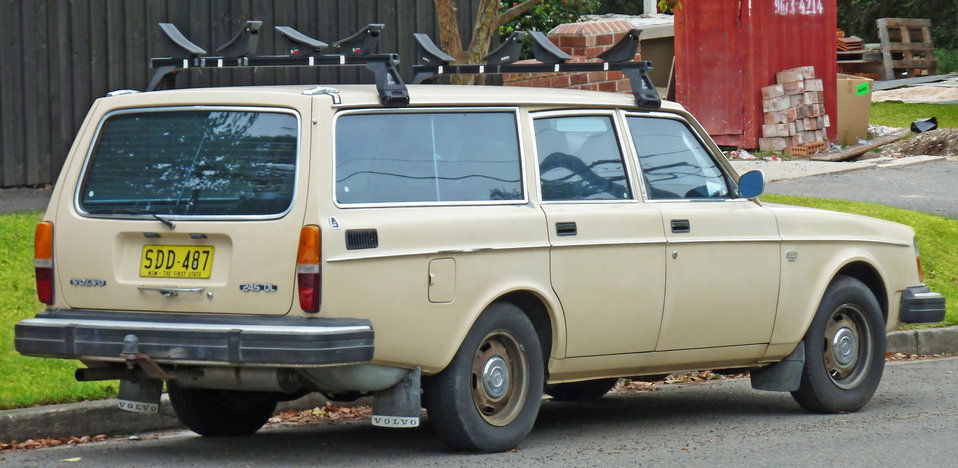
1978 Volvo 245 DL station wagon, photographed in Roseville, New South Wales, Australia.